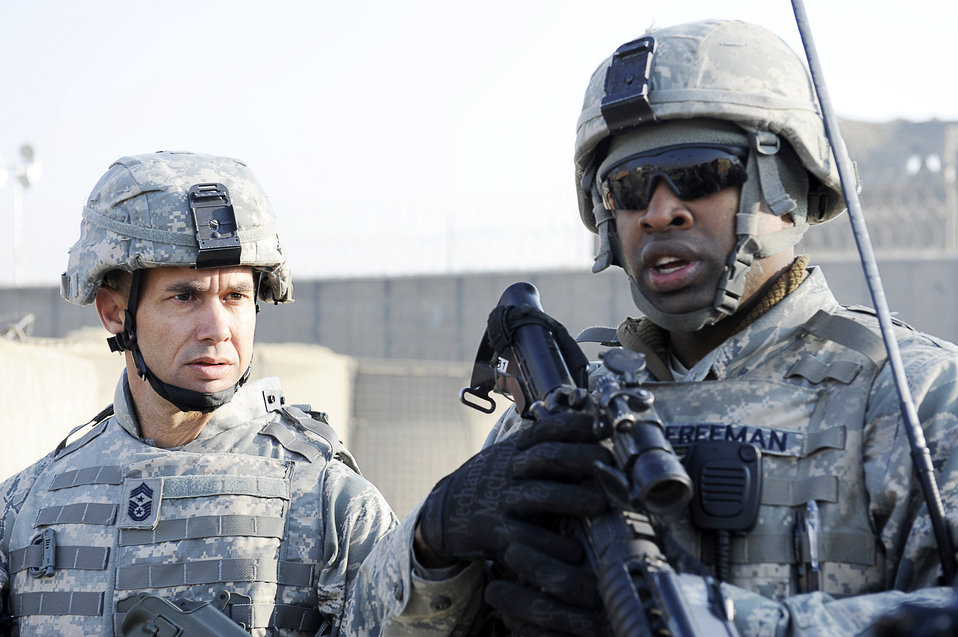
We're here to protect

Staff Sgt. Cameron Freeman (right) talks about his work area with U.S. Air Forces Central Command Chief Master Sgt. Mark Villella at Bagram Airfield, Afghanistan, Dec. 30, 2009. Chief Villella toured the work areas of Airmen during his visit. Sergeant Freeman is with security forces for the 455th Air Expeditionary Wing.